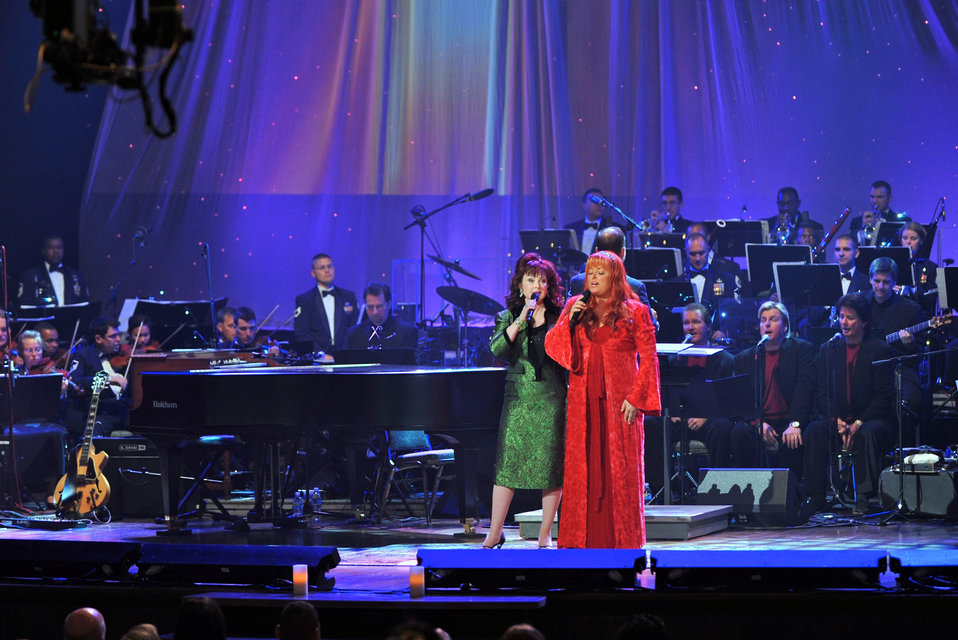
Wynonna Judd joins Reserve Band for TV broadcast

Wynonna and Naomi Judd sing classic holiday music while the Band of the Air Force Reserve and Air Force Strings perform in the background during the 2008 Holiday Notes from Home concert recorded Dec. 9 in Nashville, Tenn. The concert is annual holiday event recorded at the Grand Ole Opry House as a tribute to military men and women serving around the world. The show airs on Great American Country and on American Forces Network channels throughout December.